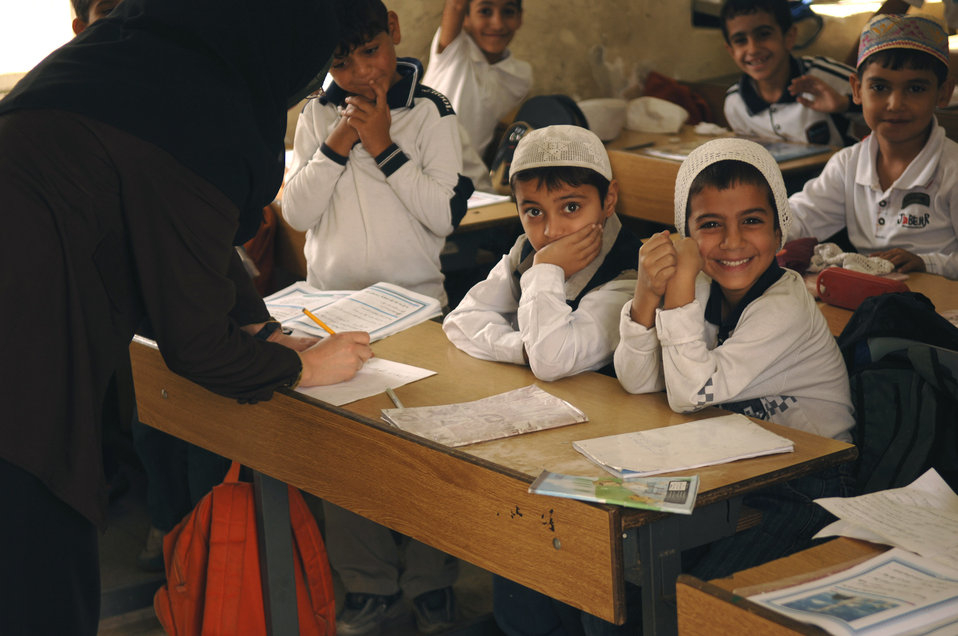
Iraqi students receive school supplies

Young Iraqi students await a gift of school supplies in their classroom at a primary school in the Bayaa District of Baghdad, Iraq, Oct. 31.